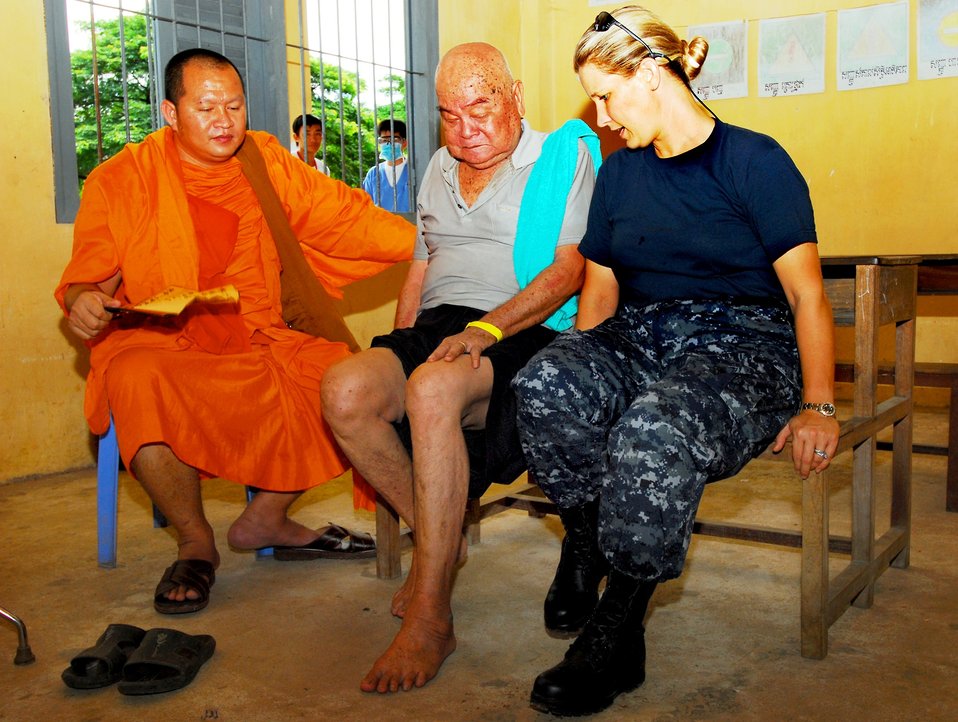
U.S. Hospital Corpsman 1st Class Heather Pounds talks with a patient about his walking abilities on June 24, 2010, in Sihanoukville, Cambodia, during a medical civic action event. The Military Sealift Command hospital ship USNS Mercy (T-AH 19) is in Cambodia in support of Pacific Partnership 2010.